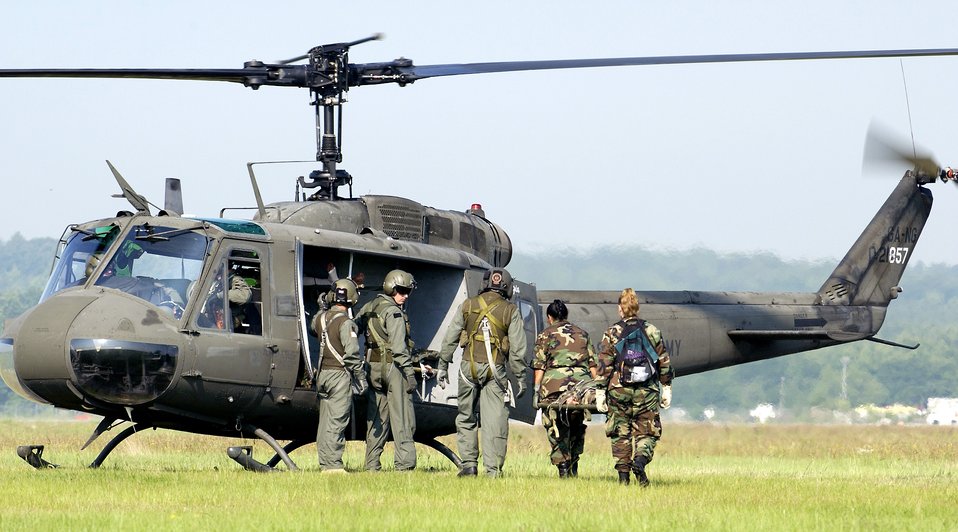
Airmen, Soldiers polish skills at Golden Medic

Two Airmen carry a litter with a mannequin patient to an Army UH-1 Huey for transport to the contingency aeromedical staging facility at Augusta Regional Airport, Ga., on Saturday, June 17, as part of Golden Medic 2006. The annual medical exercise involves medical servicemembers from various military branches, including the Air Force and Army this year.